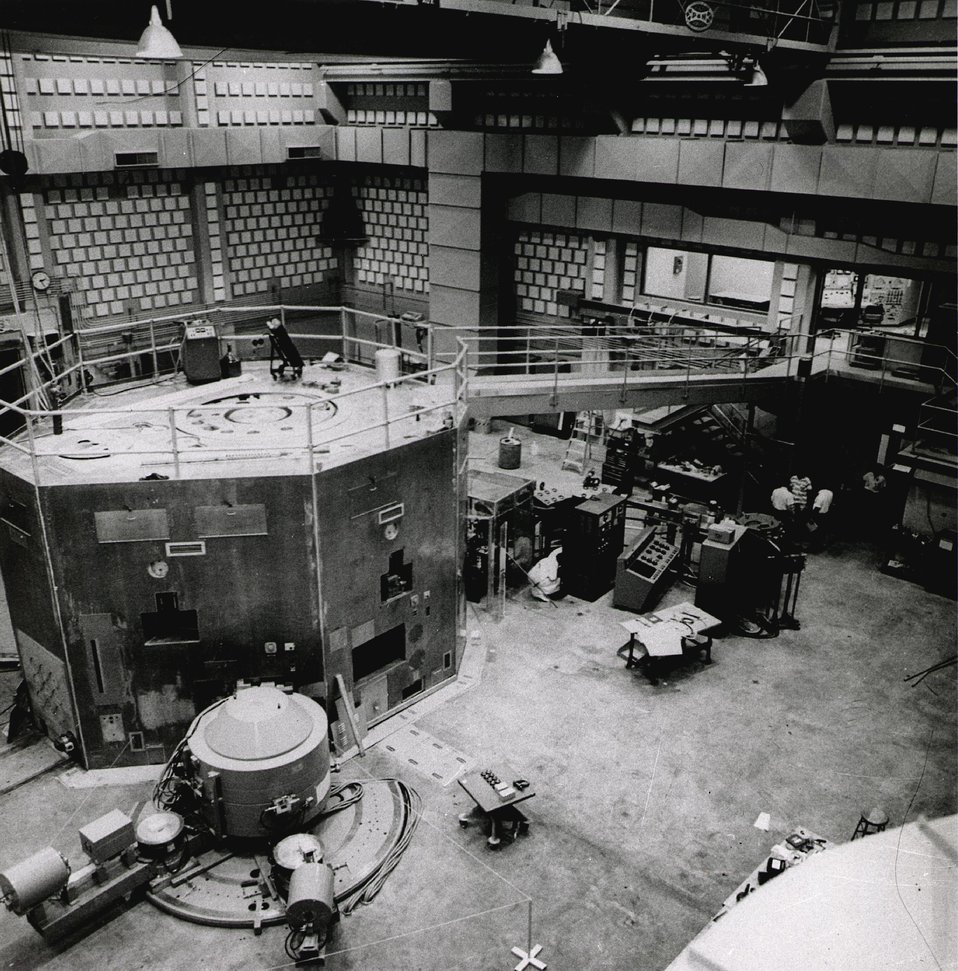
The newest research facility of the Ames Laboratory is the $4.6 million Ames Laboratory Research Reactor (AIRR). Circa 1965.